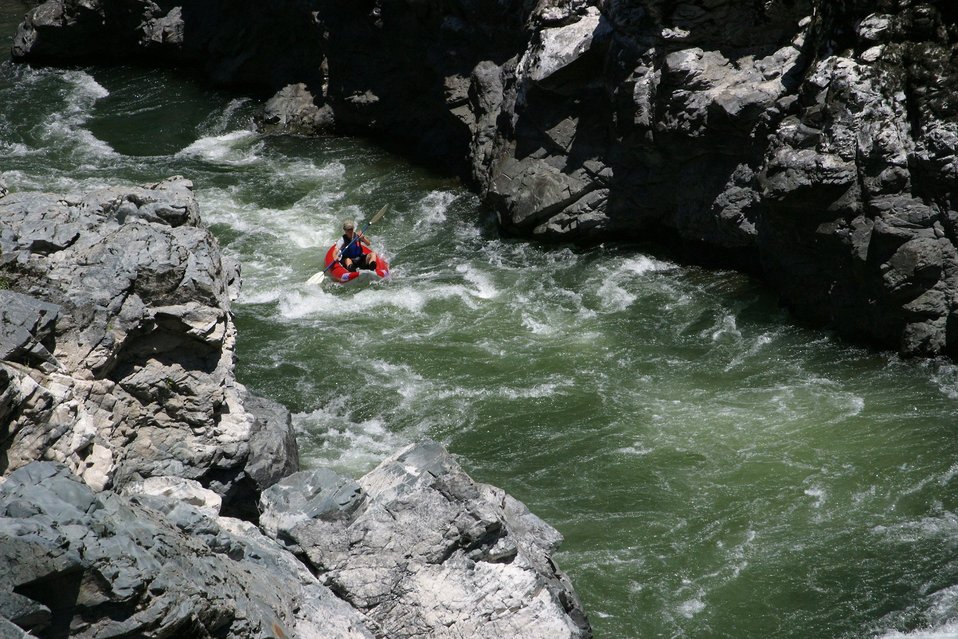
The Coffee Pot